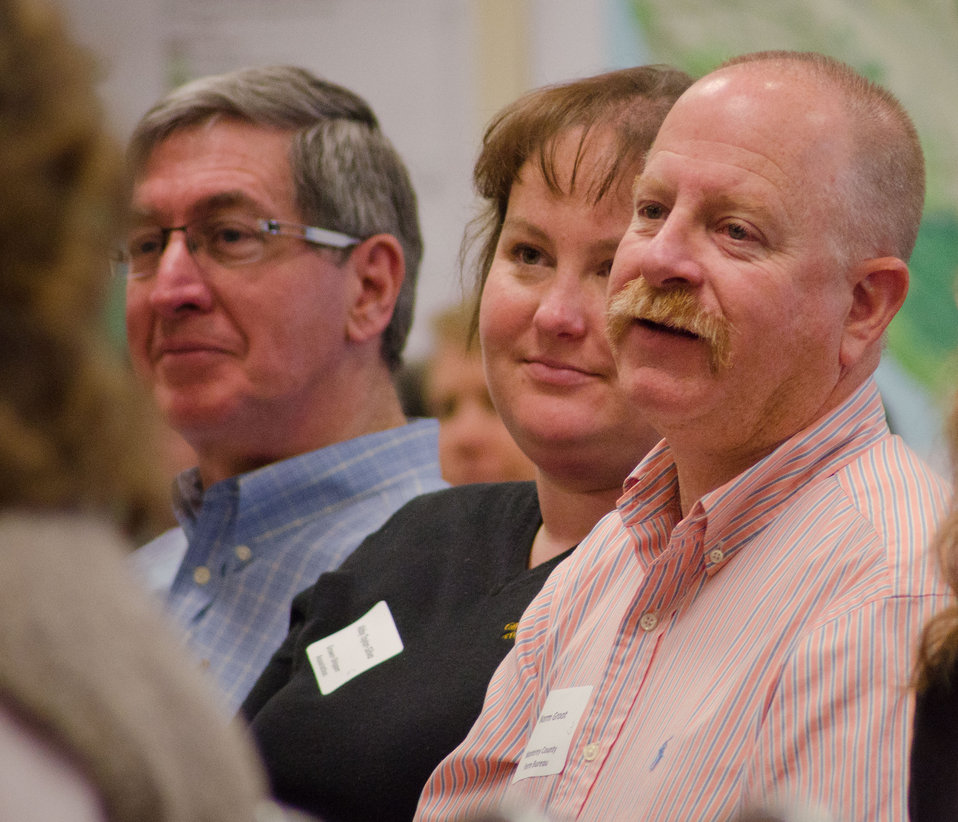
Participants at the America’s Great Outdoors Initiative (AGO) Monterey Bay Pilot Area Focus Session in the City of Watsonville’s Civic Plaza in California, on Friday, June 17, 2011. Federal and state resource management agencies came together to identify partnership opportunities and determine actions for protection and enhancement of water quality and publicize voluntary stewardship in the watersheds that drain into the Monterey Bay National Marine Sanctuary. This area includes the counties of San Mateo, Santa Cruz, Santa Clara, San Benito, Monterey, and San Luis Obispo. Key questions identified existing multi-county or multi land use partnerships; what is not being done; possible partnerships - collective resources to maximize the benefits to natural resources and communities; and additional resources that organizations can bring to maximize AGO. President Barack Obama signed the initiative on April 16, 2010 to develop a 21st Century conservation and recreation agenda.